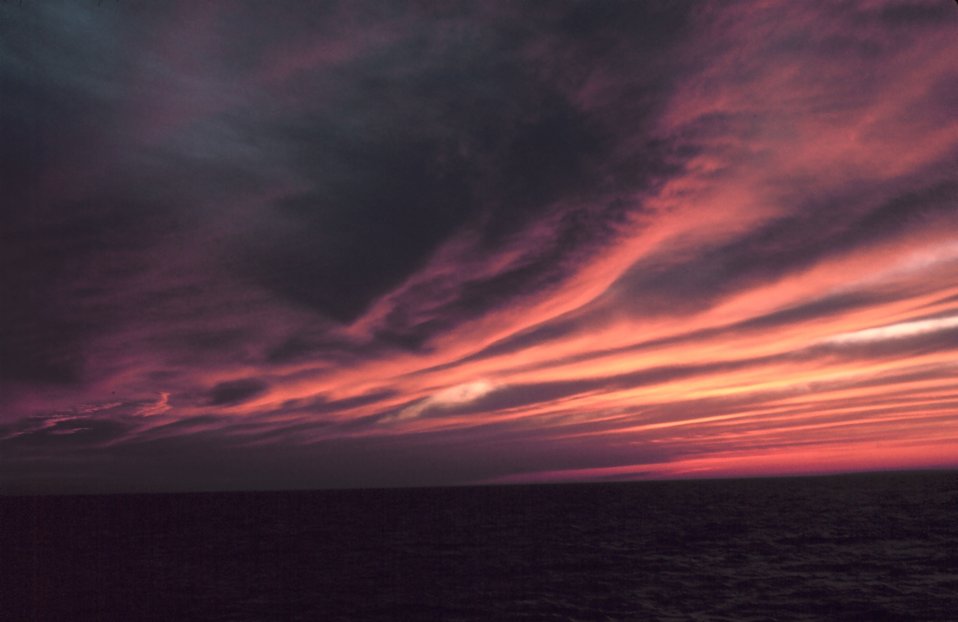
Parallel cloud bands illuminated by sun setting over the ocean.